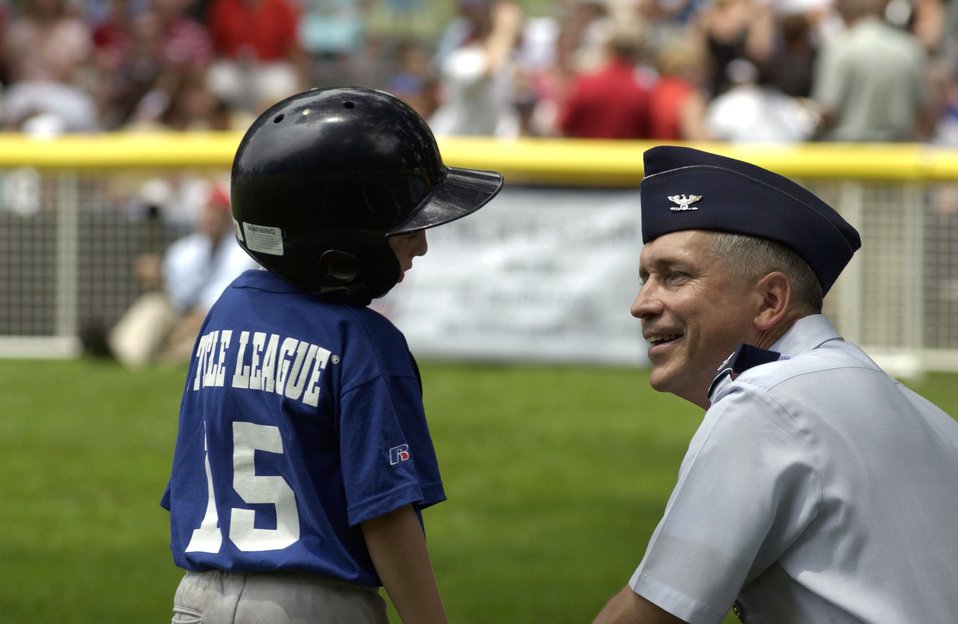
Tee ball on the South Lawn

Col. Frederick Martin talks with Jakob Pohlman of the Dolcom Little League Indians at third base during a game on the South Lawn of the White House on Friday, June 23, marking the official start of the Little League season. Colonel Martin, assigned at McGuire Air Force Base, N.J., served as the third base coach for both the Indians from Naval Submarine Base New London in Groton, Conn., and the Yankees from McGuire.